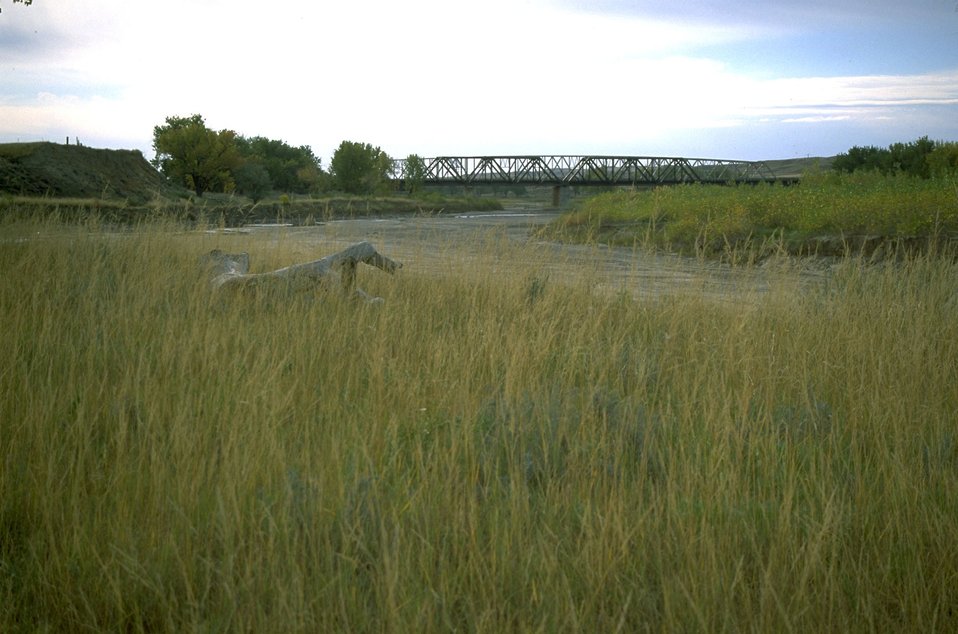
Tall grass along Powder River with train bridge in the background